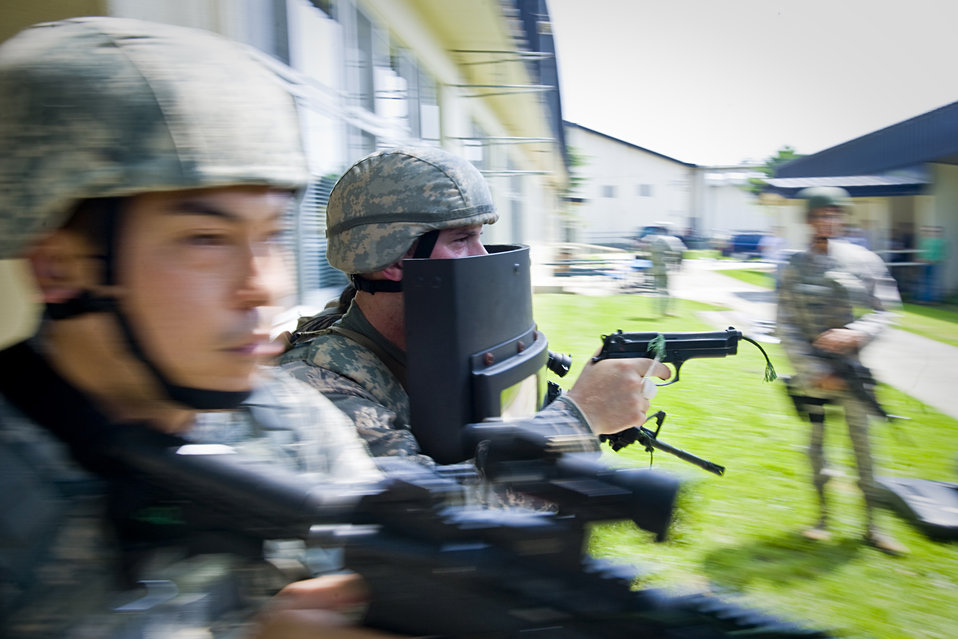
Security forces Airmen, Sailors learn new active shooter techniques

Staff Sgt. Dennis Mathys, left, and Staff Sgt. John Havens practice rescue-team drills during high-risk response training July 22, 2010, at Misawa Air Base, Japan. Air Force requirements for improved active shooter training allowed security forces Airmen and Sailors to attend the Pacific Air Forces command's HRRT program July 19 through July 23. Sergeants Mathys and Havens are assigned to the 35th Security Forces Squadron at Misawa AB, Japan.